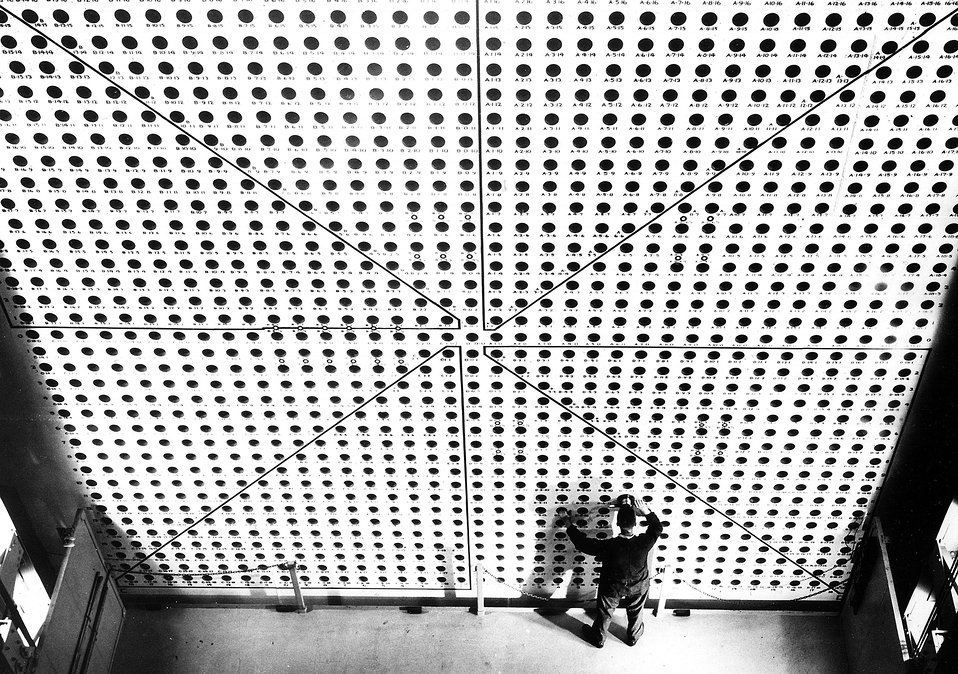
South face of Brookhaven reactor. c. 1957